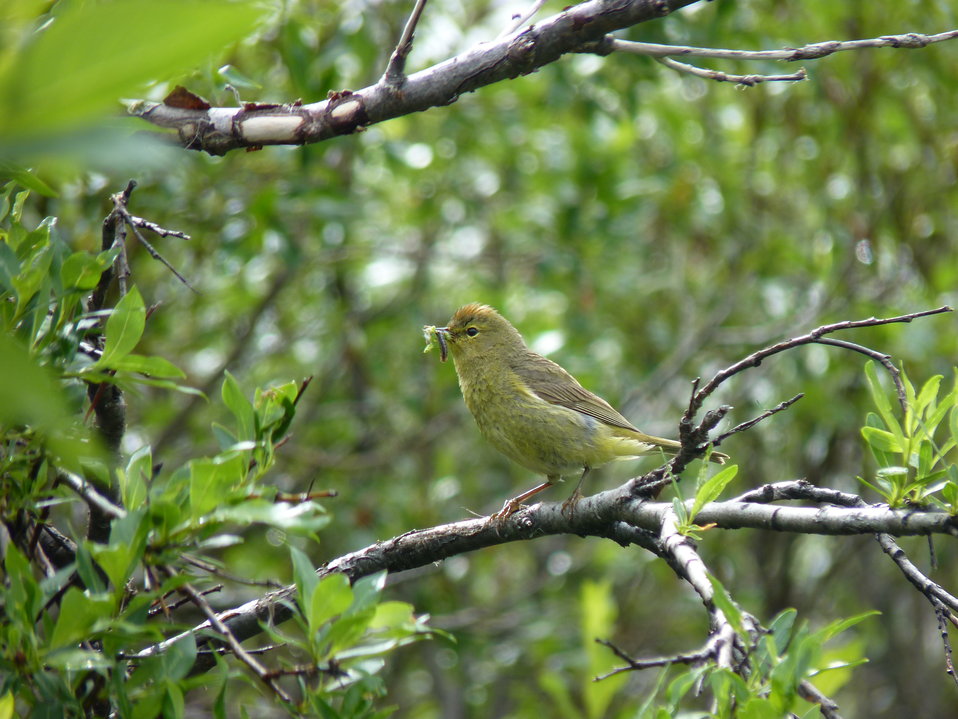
Orange-crowned warbler with food

Andreafsky wilderness, Yukon Delta National Wildlife Refuge